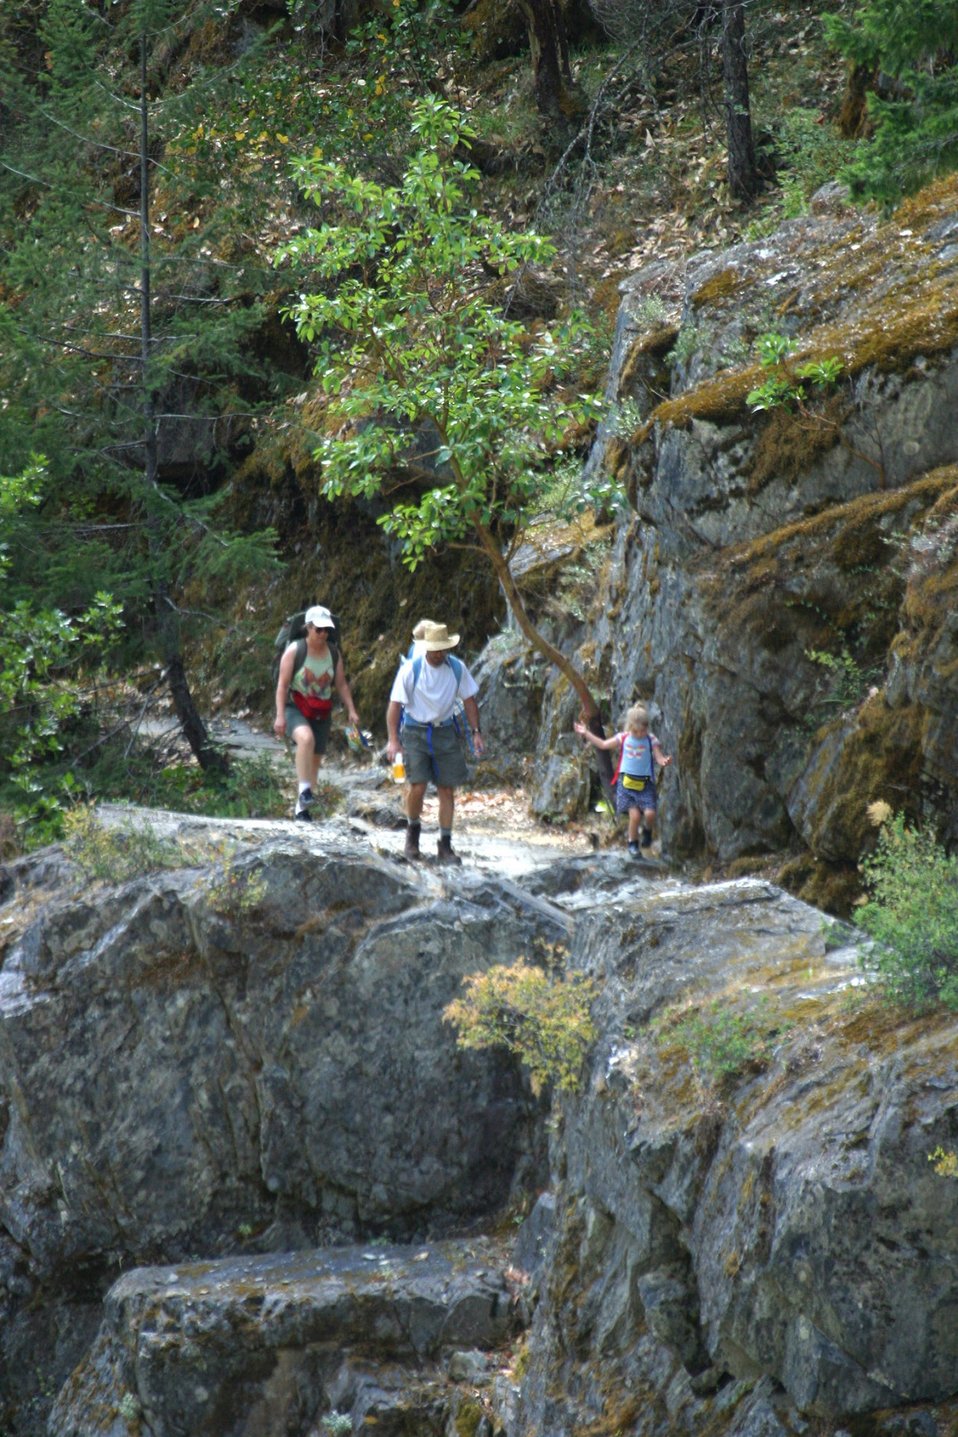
Hiking Rainie Trail between Grave Creek and Rainie Falls.